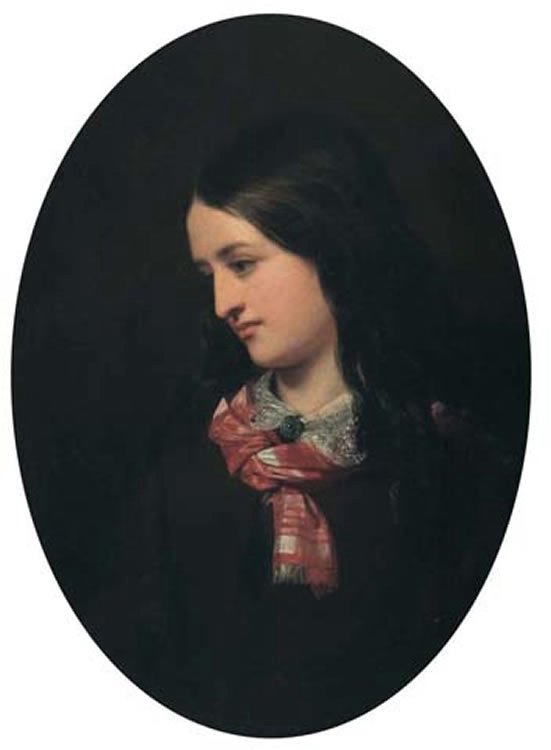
Portrait of a Young Woman with Plaid Scarf, oil painting by Cornelius Krieghoff, 16 x 11.9 in., Ritchies, Toronto